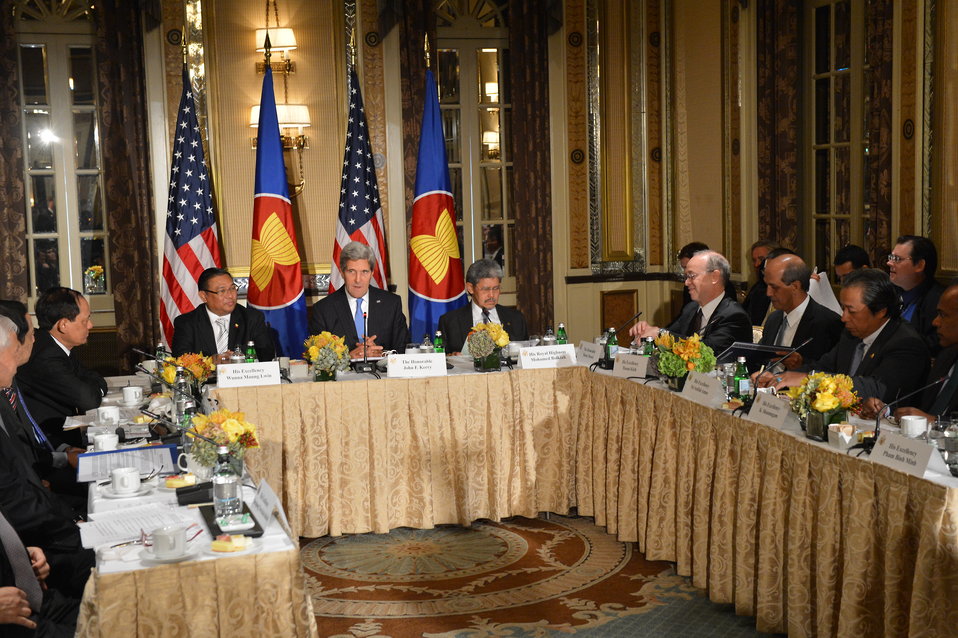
Secretary Kerry Participates in a Meeting of the ASEAN Foreign Ministers

U.S. Secretary of State John Kerry participates in a meeting of the ASEAN Foreign Ministers in New York City on September 27, 2013.